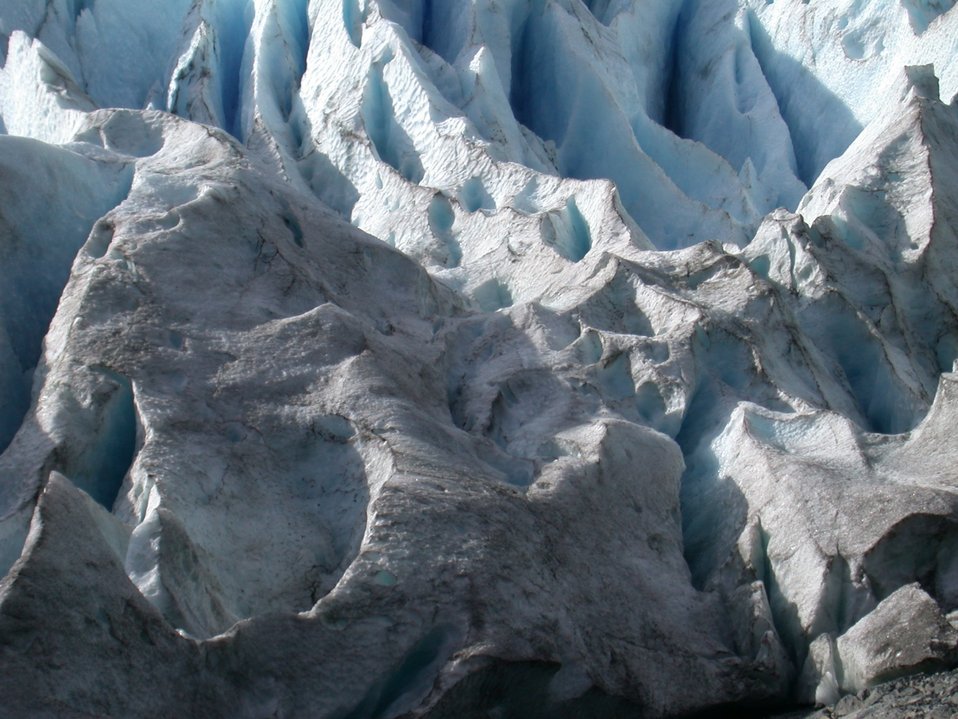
Glacier in Portage area.